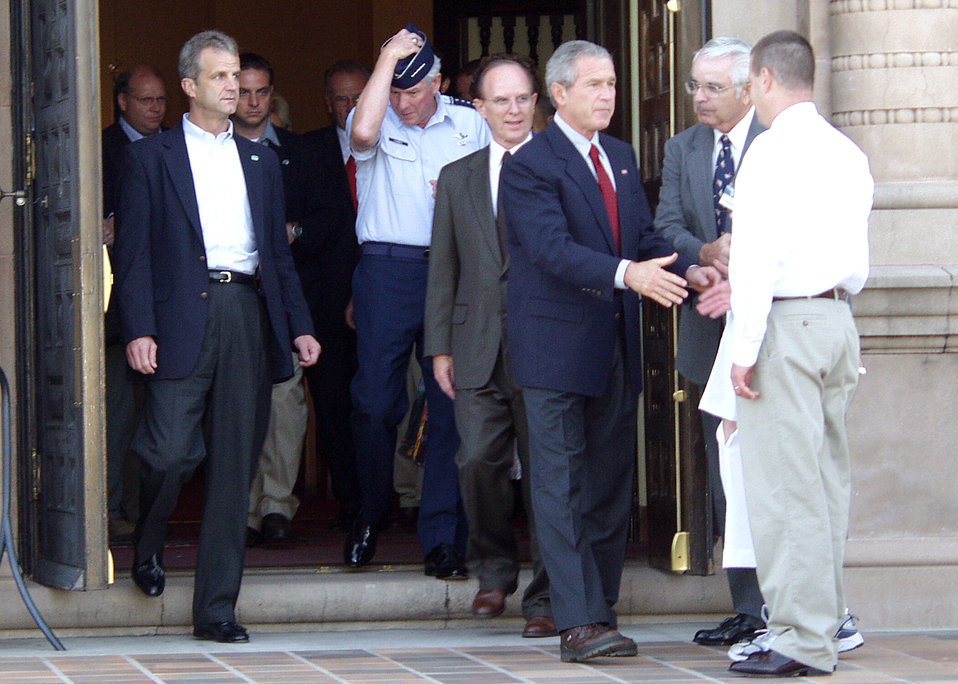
President monitors Hurricane Rita operations at Randolph

RANDOLPH AIR FORCE BASE, Texas -- President George W. Bush greets a member of the Randolph Chapel congregation here following morning services Sept. 25. The president spent the night at the San Antonio base where he received updates about the military's response to Hurricane Rita.